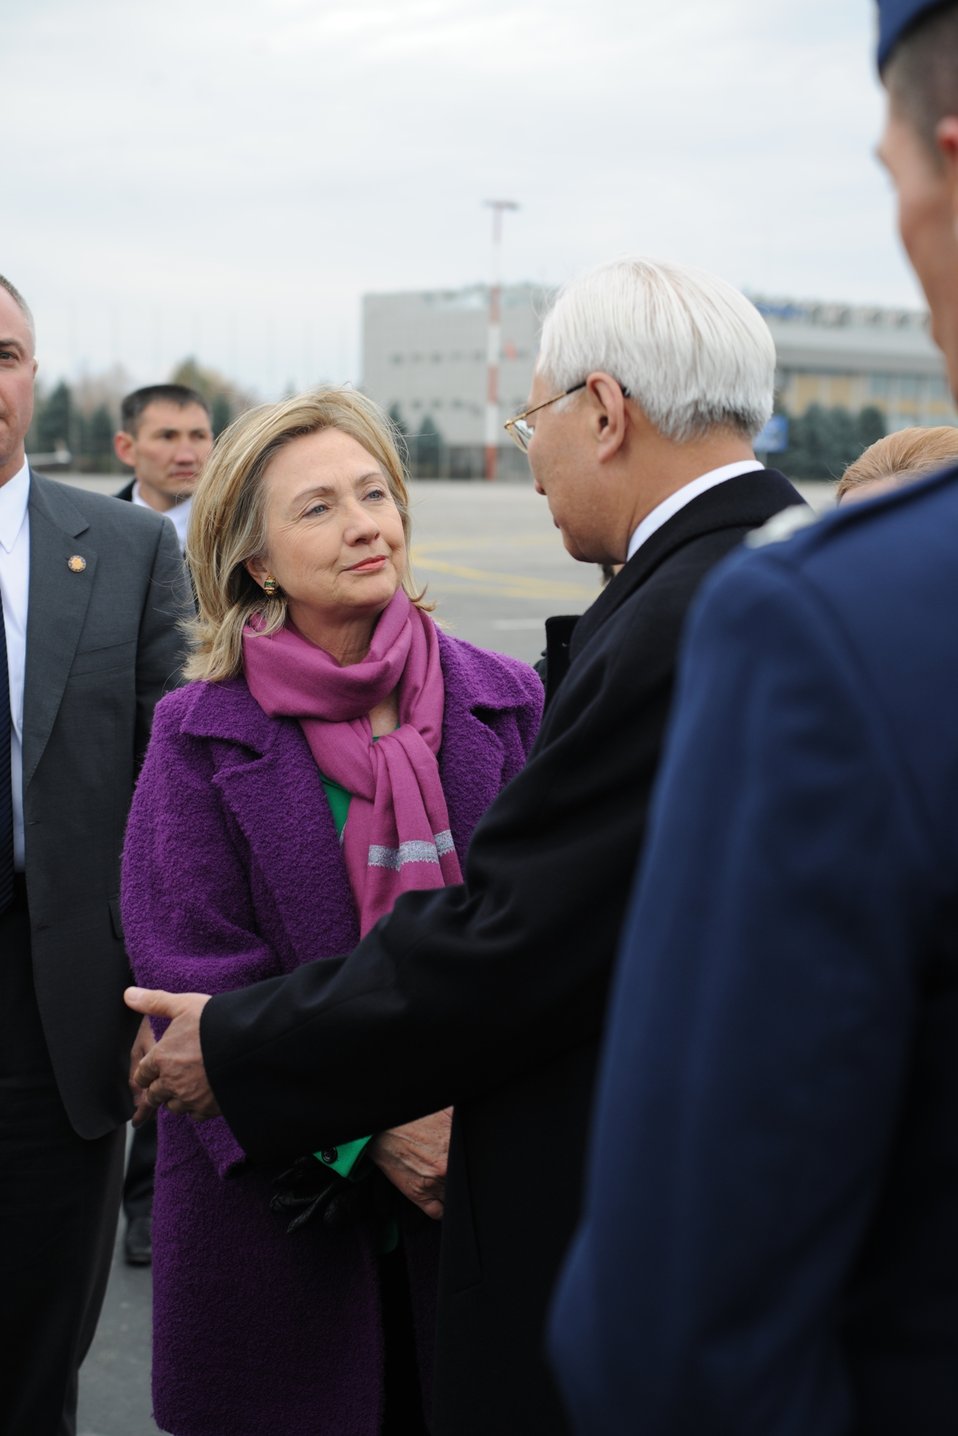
Secretary Clinton Is Greeted By Kyrgyz Vice Prime Minister Muraliev

U.S. Secretary of State Hillary Rodham Clinton is greeted by Kyrgyz Vice Prime Minister Amangeldi Muraliev in Kyrgyzstan on December 2, 2010.